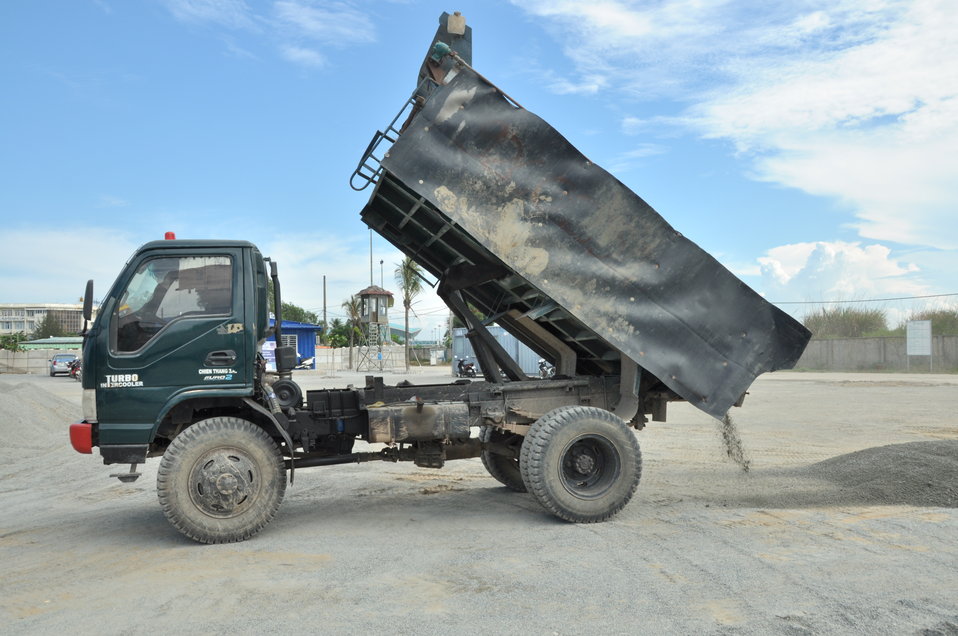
Site construction at the Environmental Remediation of Dioxin Contamination at Danang Airport

Progress at the Danang Airport remediation site
April 23, 2013